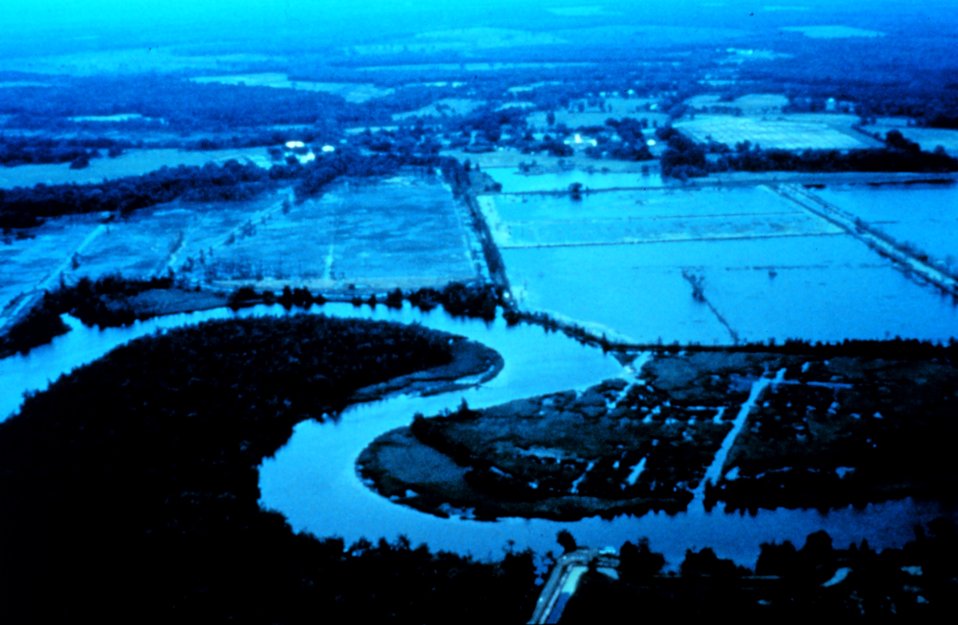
ACE Basin National Estuarine Research Reserve. Managed impoundments along the Edisto River.